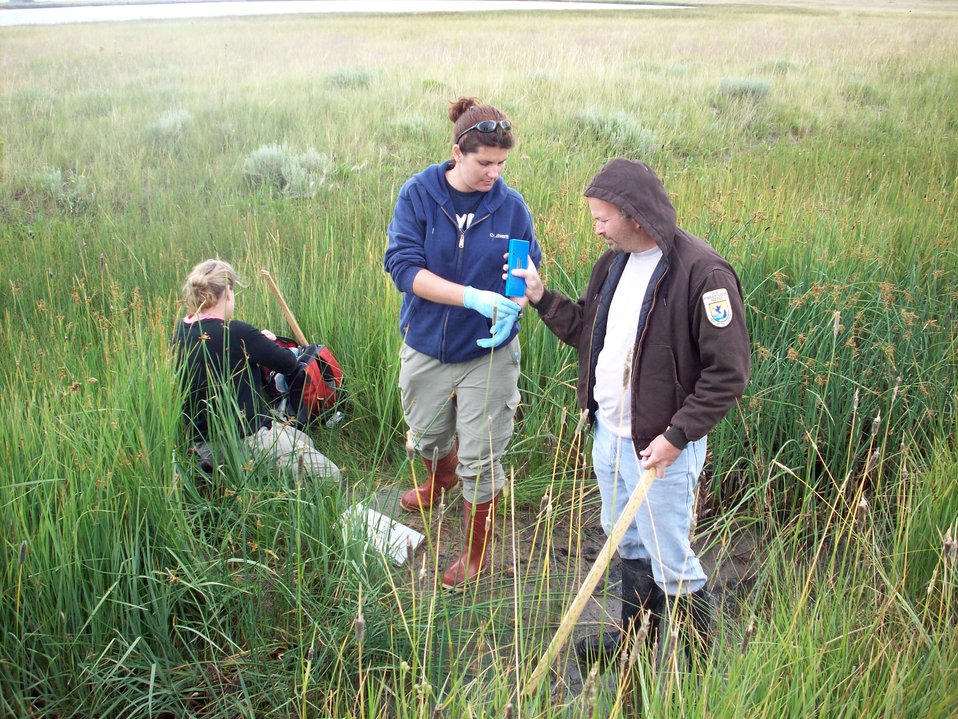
Wyoming Toad Habitat

Saratoga Fish Hatchery biologist take samples of the toads natural habitat for analysis.